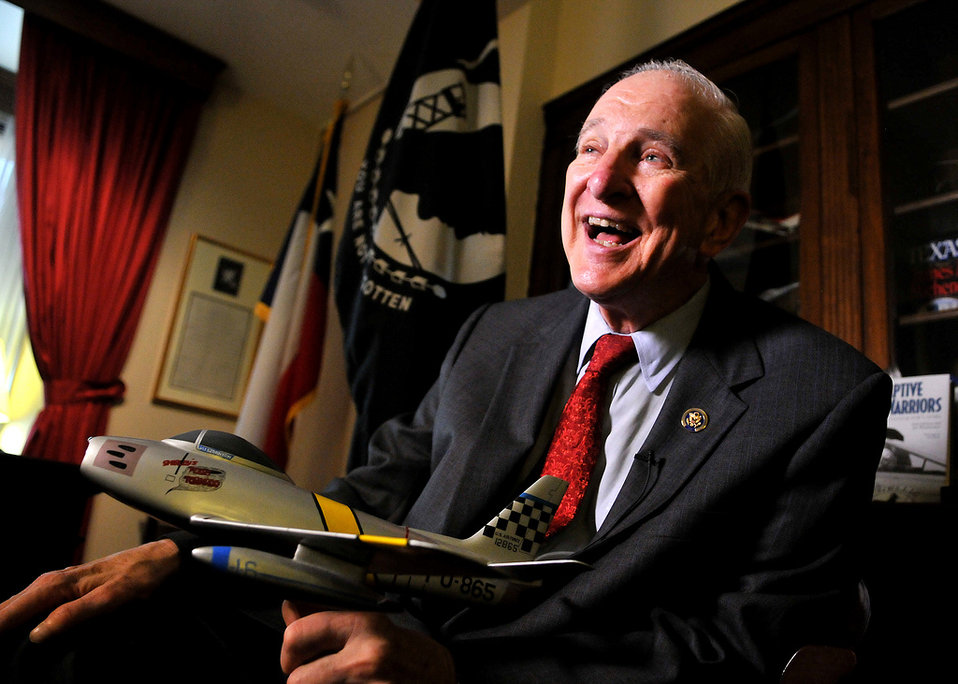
Pioneers in Blue

Retired Col. Sam Johnson, a highly decorated fighter pilot, served in the Air Force for 29 years. He flew combat missions in both the Korean and Vietnam wars and was a prisoner of war in Vietnam's Hanoi Hilton for nearly seven years. Colonel Johnson is featured in